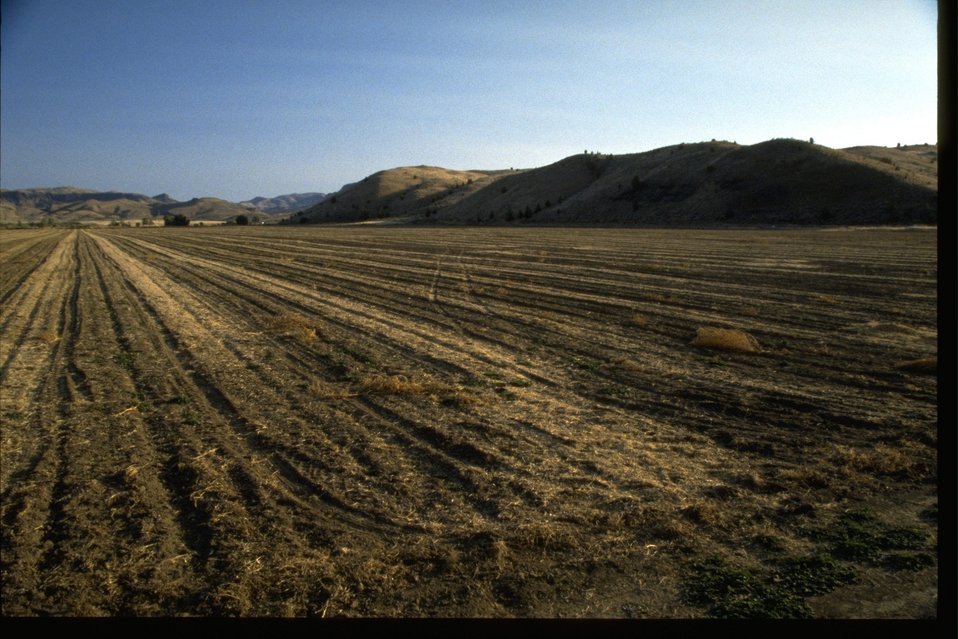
Clarno BLM agriculture field along the John Day River.